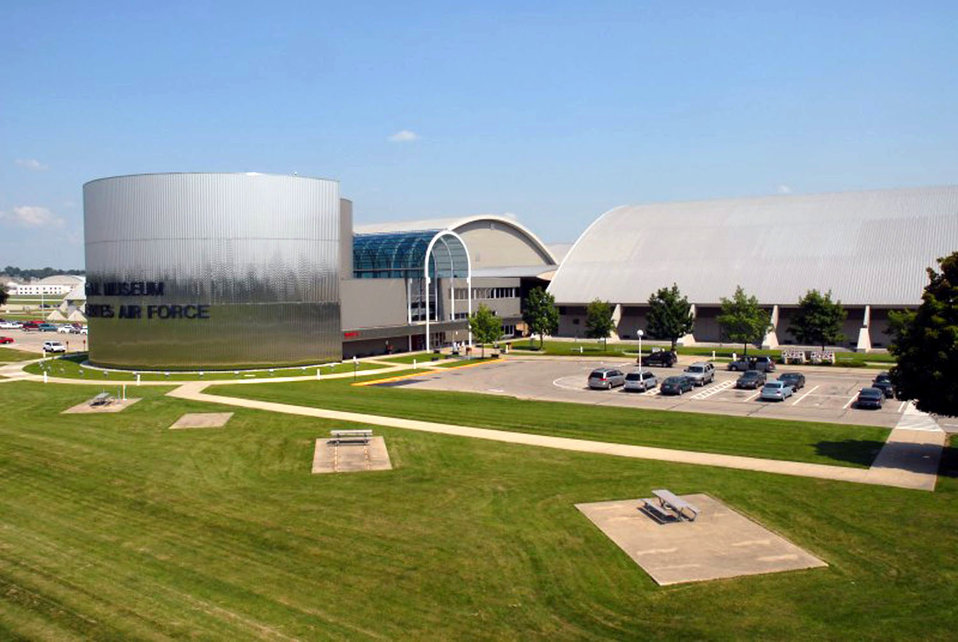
National Museum of the United States Air Force.